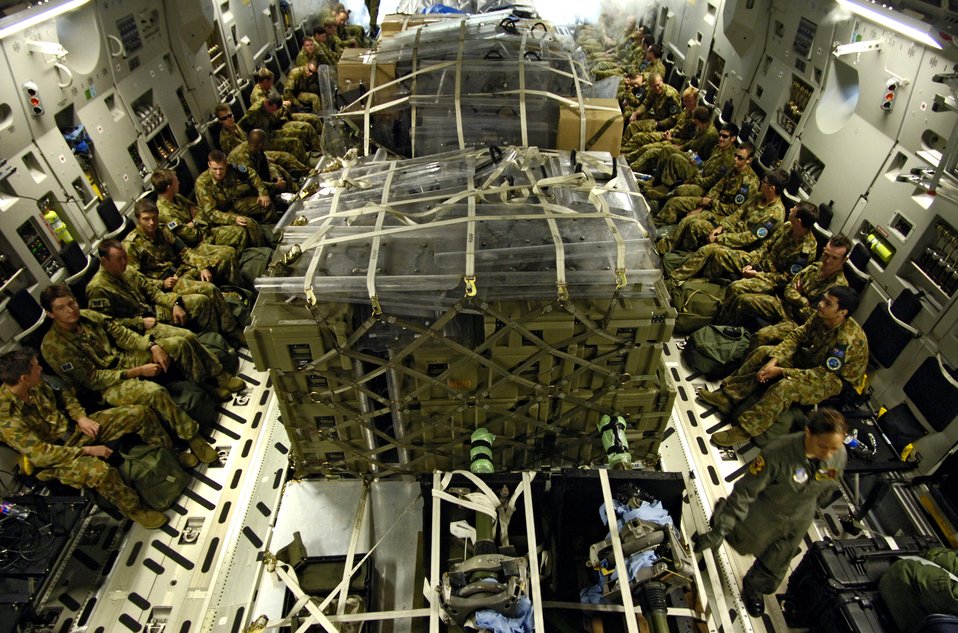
Loadmasters help reposition Australian Defense Forces

Members of the Australian Defense Force and their equipment are loaded onto a C-17 Globemaster III at Honiara International Airport, Solomon Islands, on Sunday, May 28, 2006. Two C-17 Globemaster IIIs and their crews are helping the Australian Defense Force reposition its forces from the Solomon Islands back to Australia to better support peace operations in East Timor.